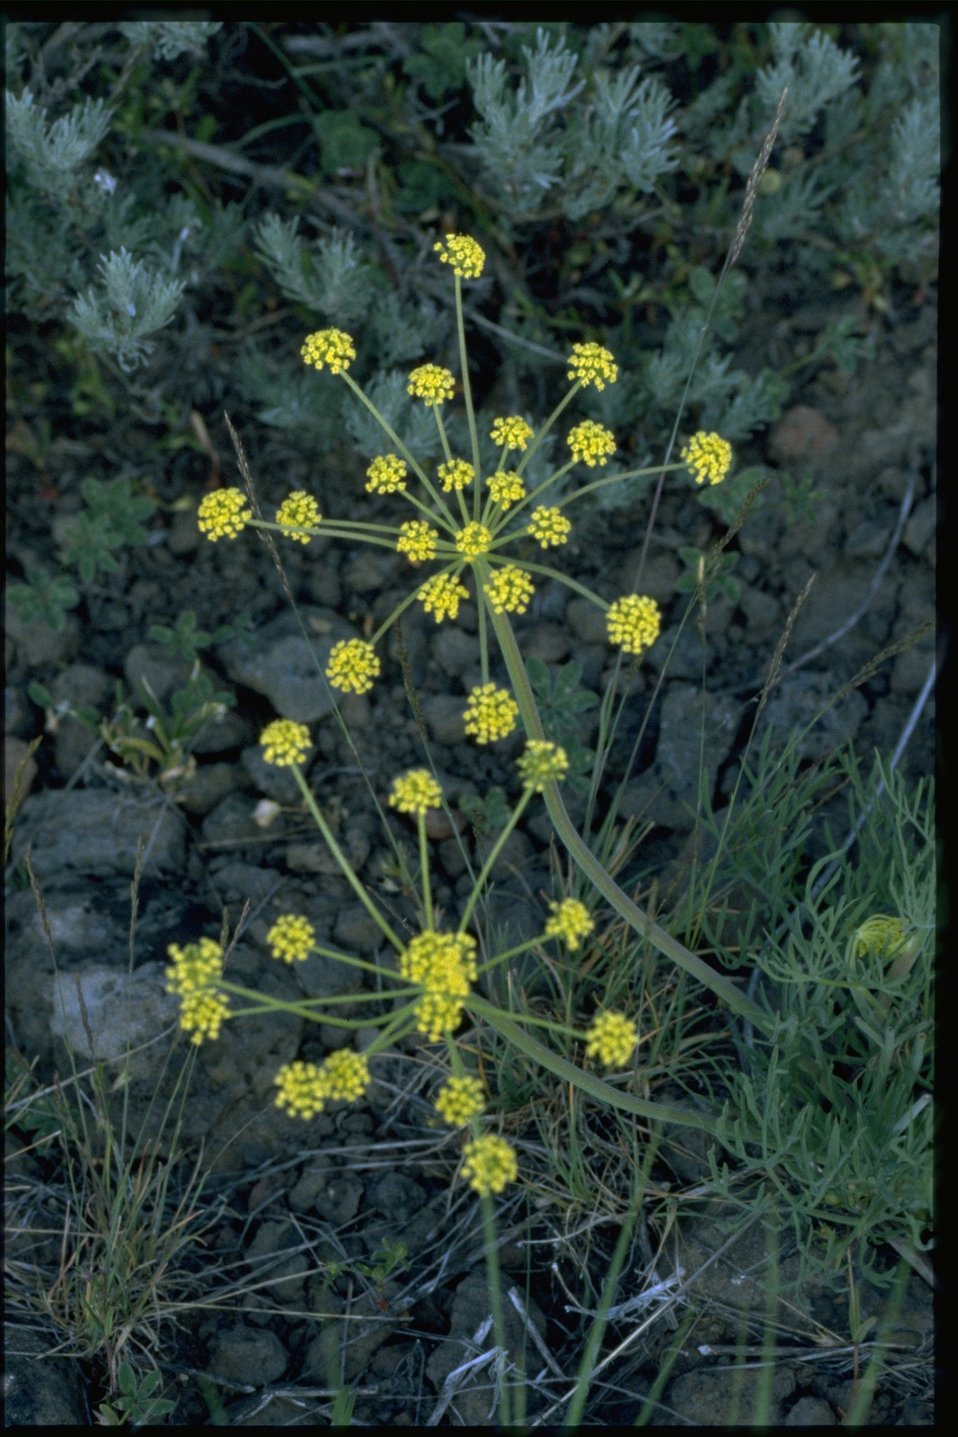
Farshot of Nine Leaf Biscuitroot wildflower (Lomatium Triternatum).